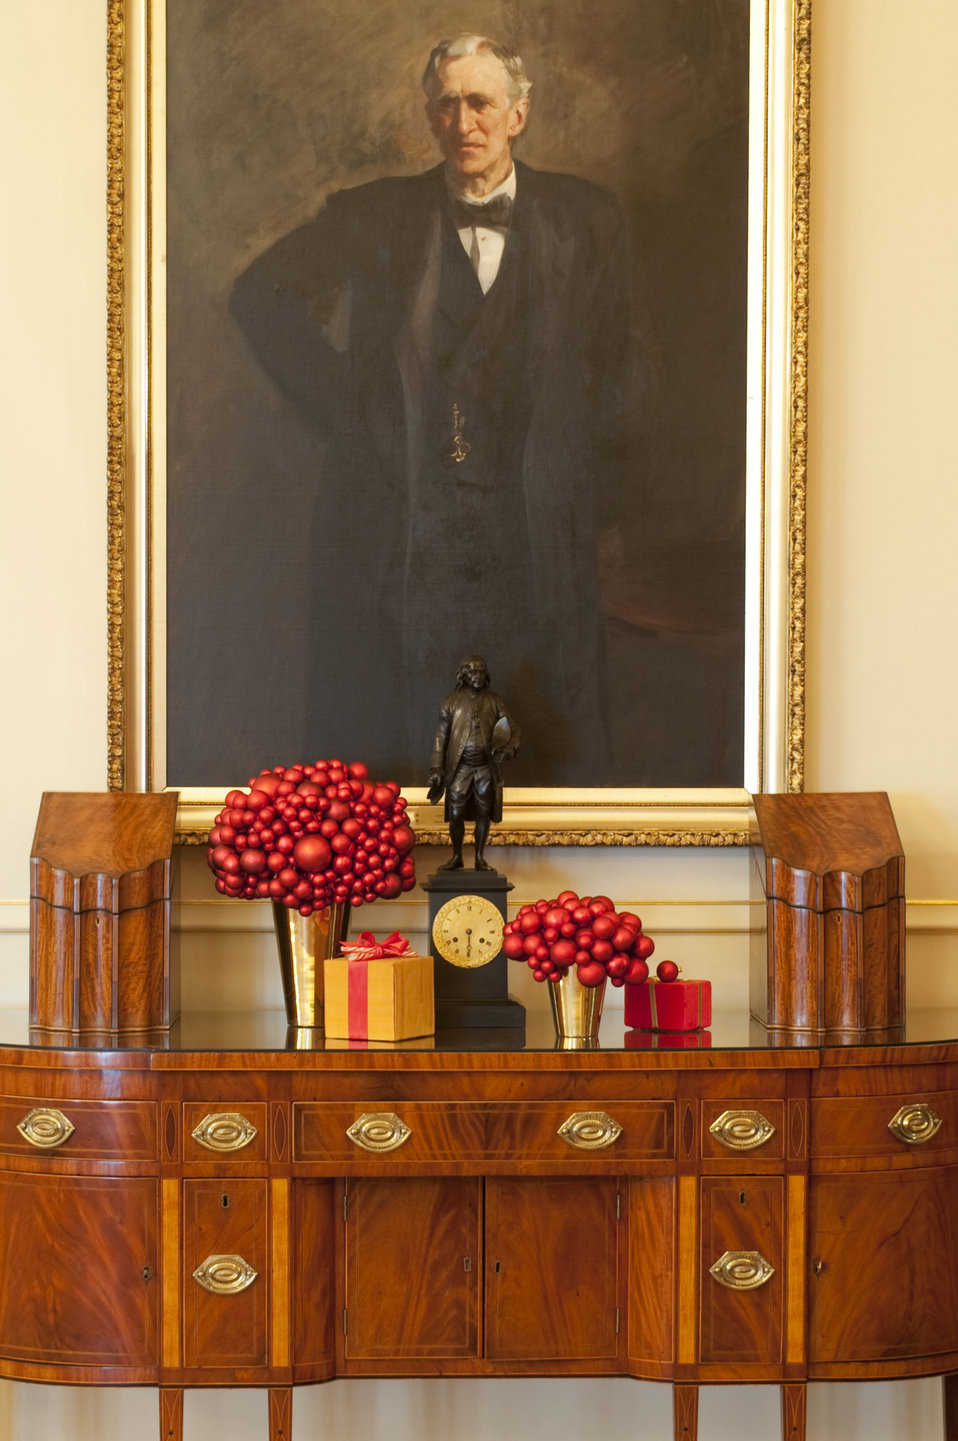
The U.S. Department of State Partners With Time Inc. and InStyle To Decorate the Benjamin Franklin State Dining Room

The U.S. Department of State partners with Time Inc. and InStyle to decorate the Diplomatic Reception Rooms for the Holidays in December 2010. Pictured in this photo is the Benjamin Franklin State Dining Room.